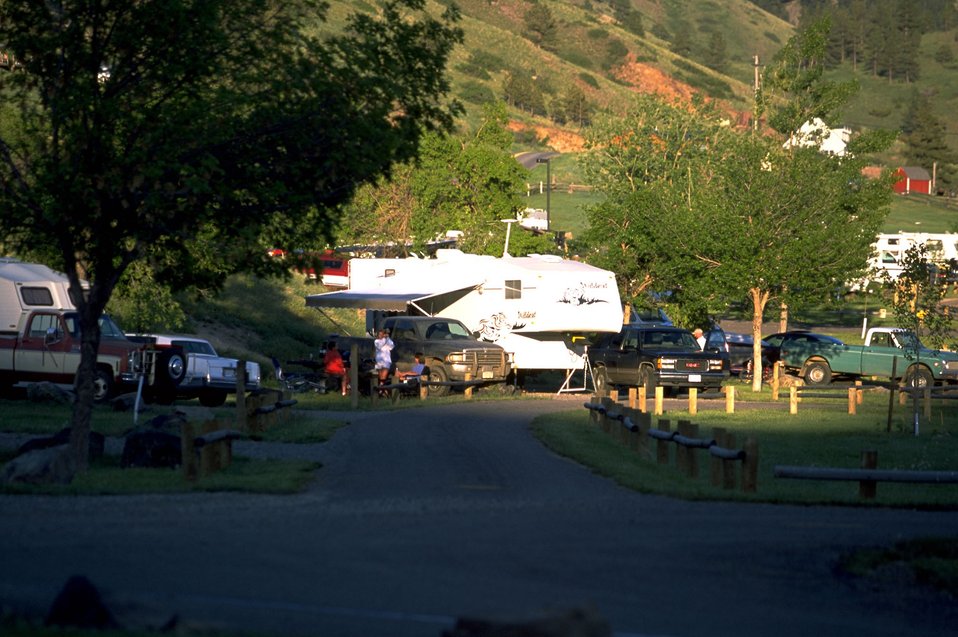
Camping at Holter Lake Recreation Area